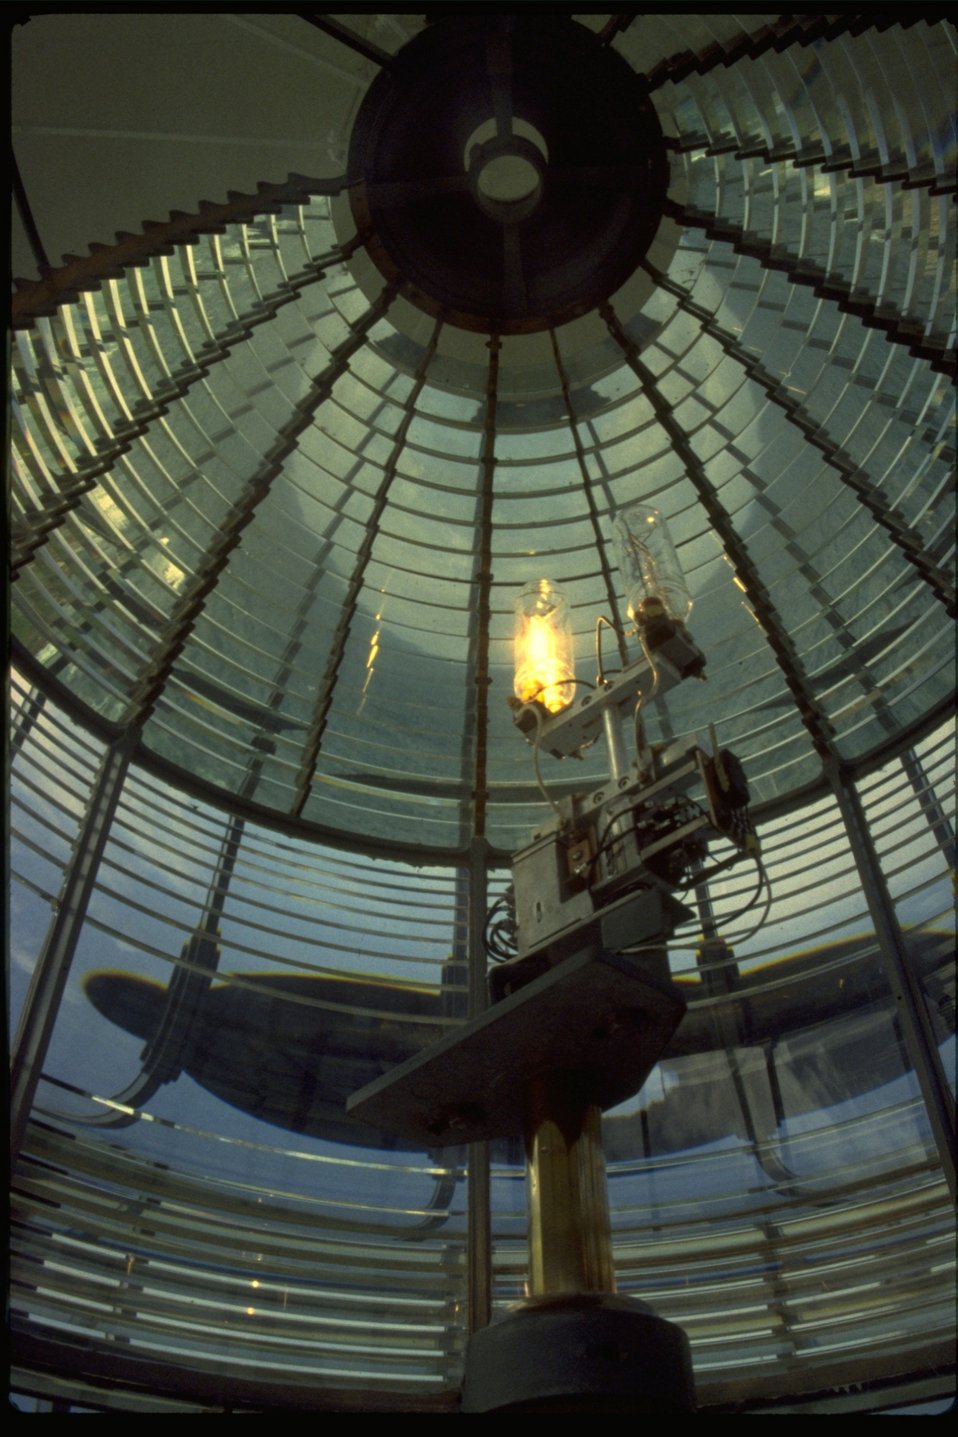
The light inside of the Yaquina Head Light House.